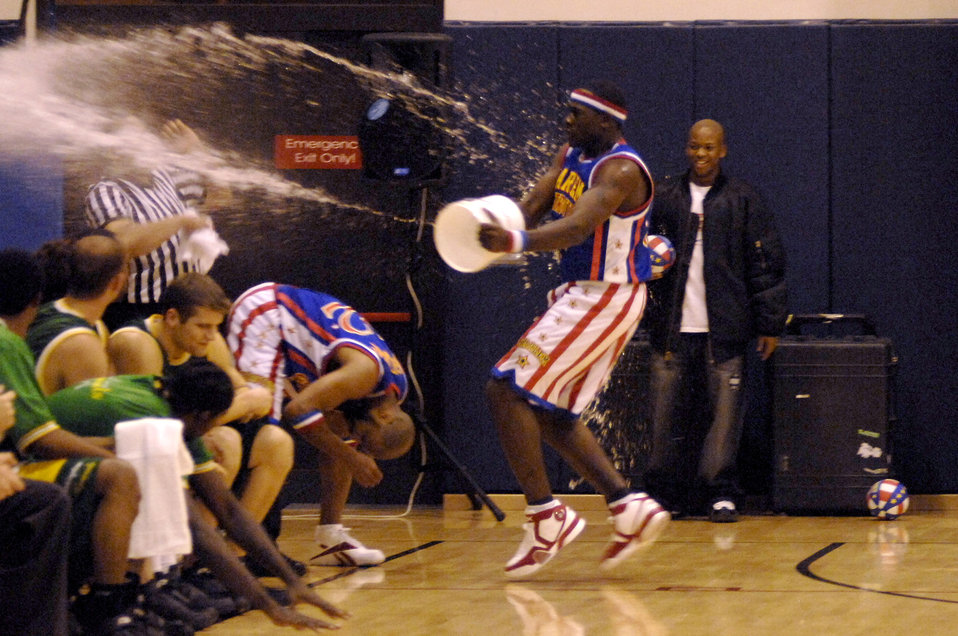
Harlem Globetrotters share the magic

A member of the Harlem Globetrotters interacts with the audience by throwing water on them during a basketball game at the Dragon Fitness Center Dec.1 at Aviano Air Base, Italy. The Harlem Globetrotters are touring Army and Air Force installations throughout Europe as part of their